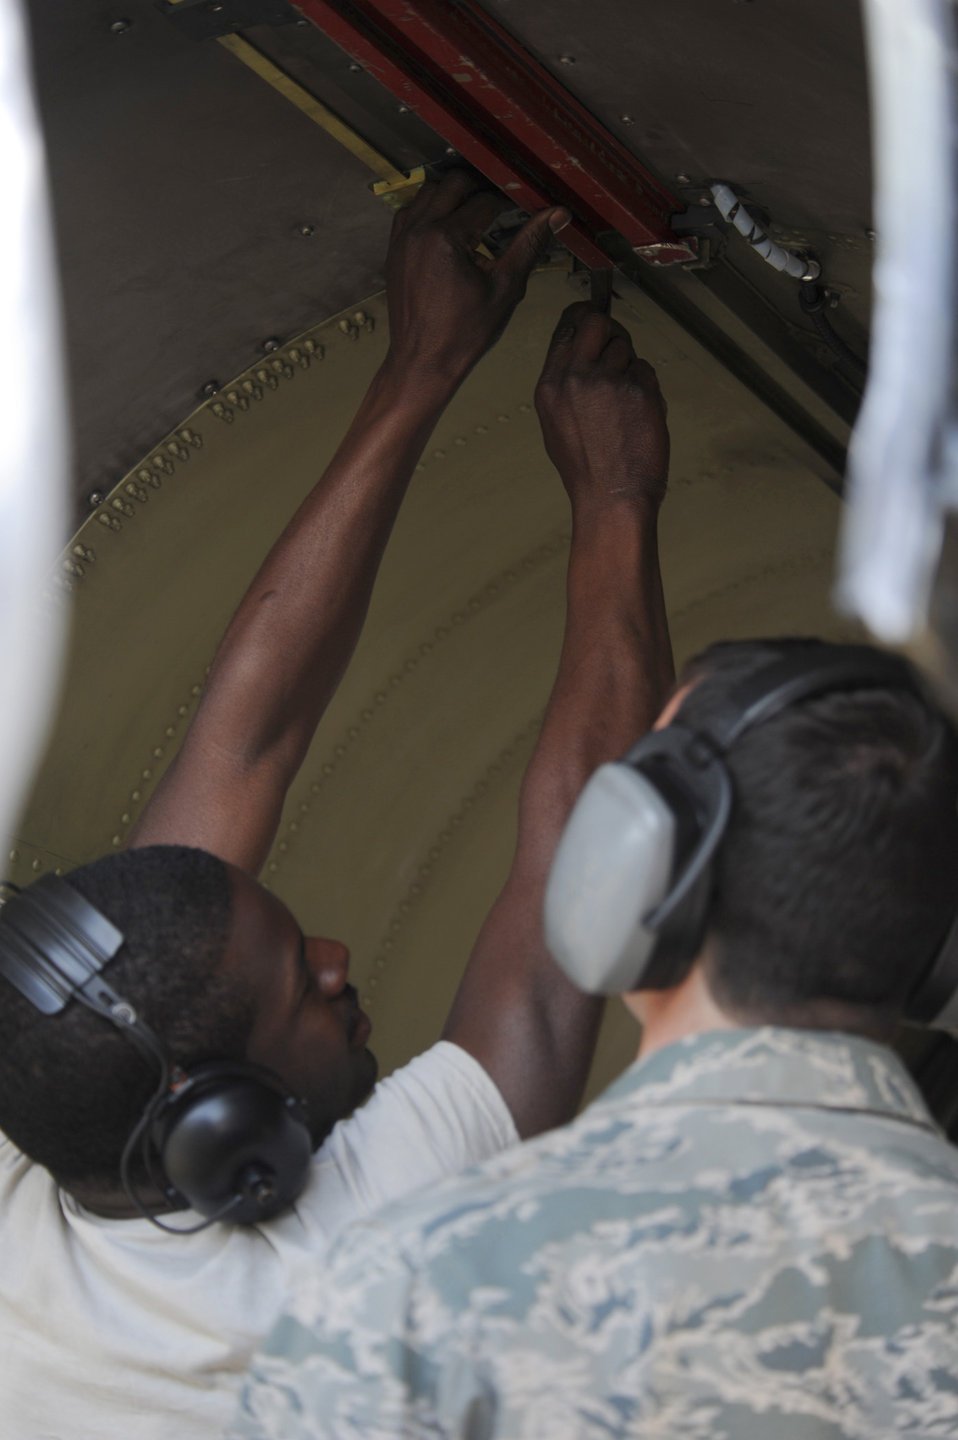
Operation Unified Protector

Staff Sgt. Kemp Roderick inspects F-16 Fighting Falcon March 31, 2011, at Aviano Air Base, Italy in support of Operation Odyssey Dawn. Sergeant Roderick is assigned to the 52nd Aircraft Maintenance Squadron from Spangdahlem Air Base, Germany.